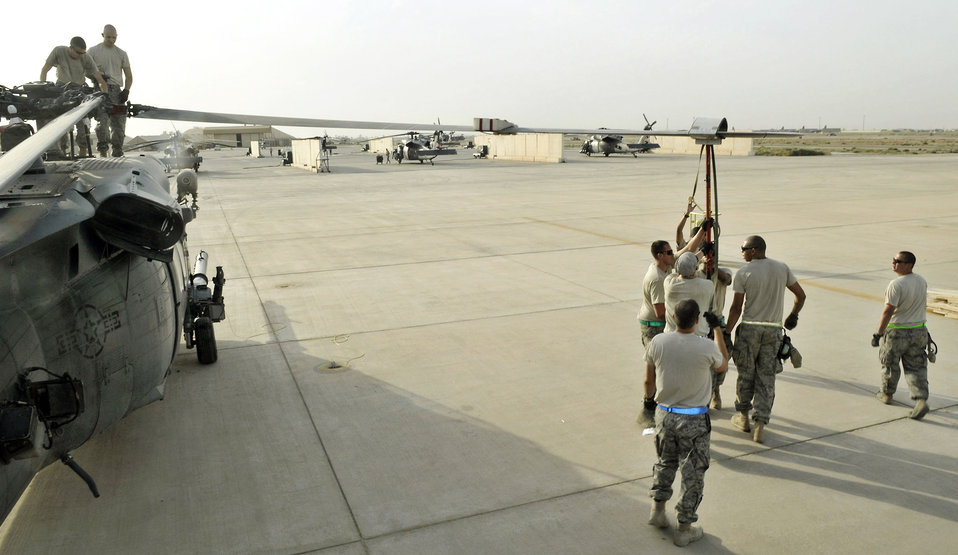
Moving HH-60 Pave Hawks

Airmen of the 332nd Expeditionary Aircraft Maintenance Squadron unfold a propeller to a HH-60 Pave Hawk at Joint Base Balad, Iraq, after receiving the helicopter from a unit in Afghanistan Aug. 12, 2010.